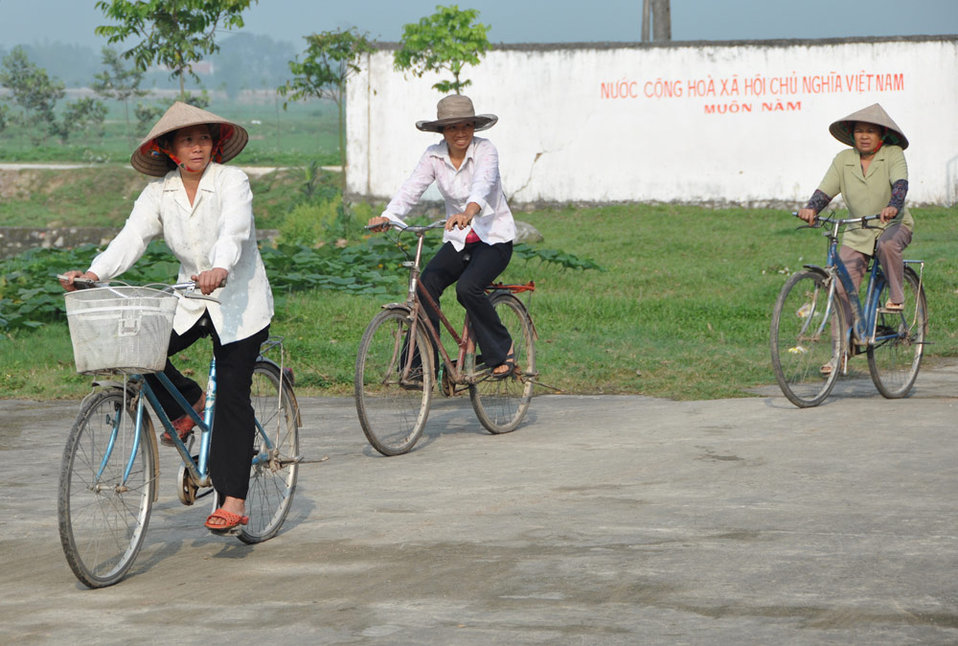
Residents in Vietnam's Tien Ngoai Commune, Duy Tien District, Ha Nam Province, discuss ways to prevent and control avian and pandemic influenza.